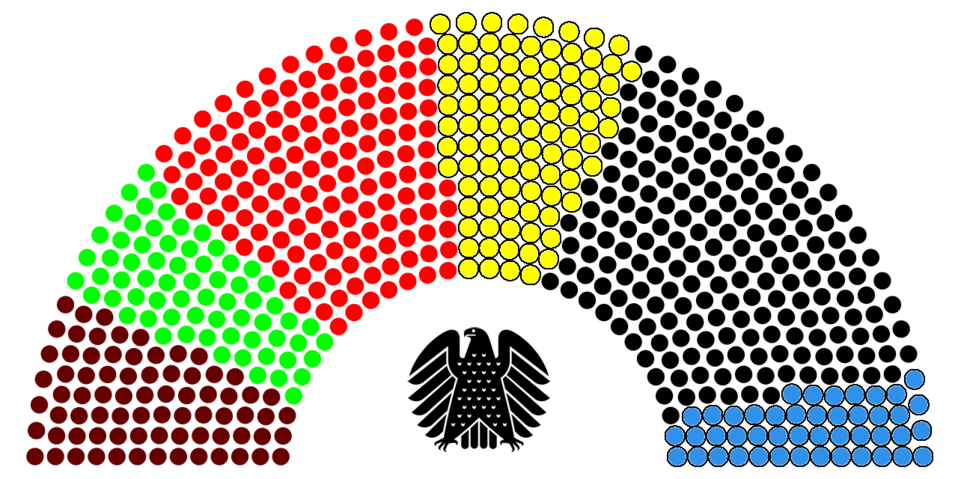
Structure diagram for the 17th Bundestag.